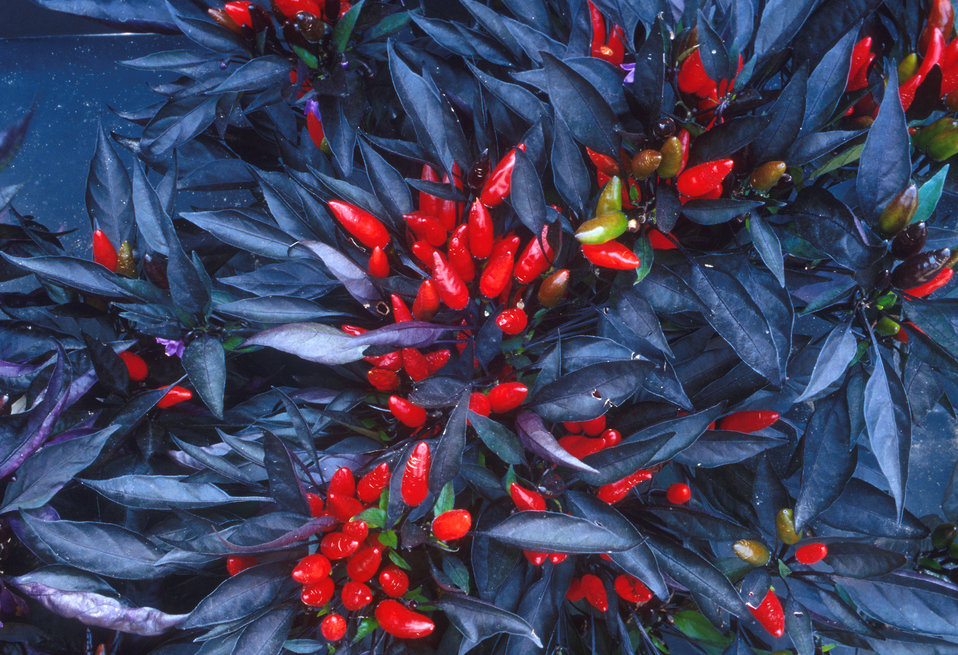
This dwarf ornamental pepper plant has finely shaped leaves and small chili pepper-shaped or ball-shaped fruits. The peppers themselves are brilliantly colored, from scarlet reds to banana yellow, and often grow upright. Uncommon colors such as purple and white are also possible. This unusual coloration can carry over to the leaves themselves, with varieties that have black, purple and variegated foliage.